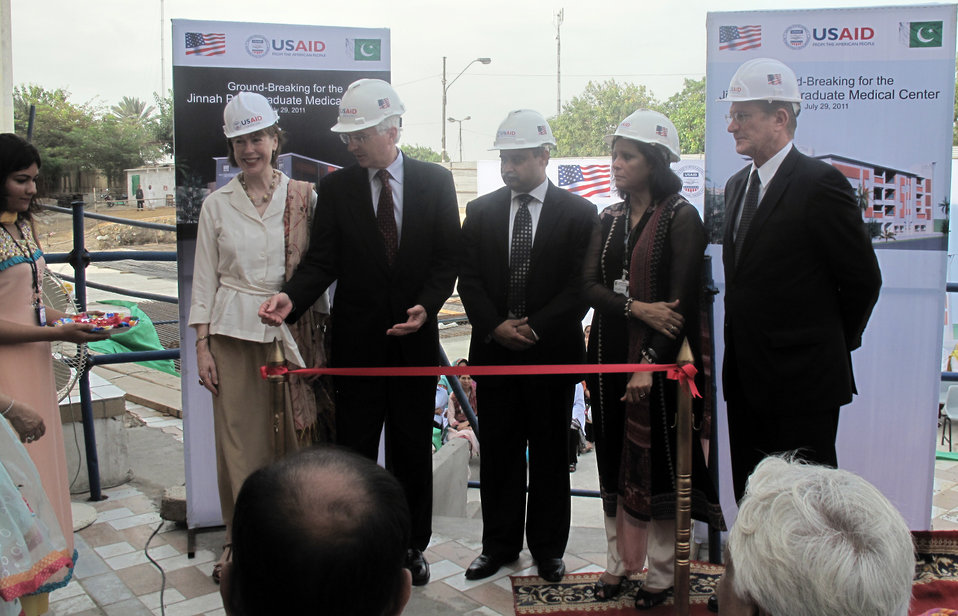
Jinnah Post Graduate Medical Center Karachi

Karachi, July 29, 2011 - U.S. Ambassador Cameron Munter and his wife Dr. Marilyn Wyatt at the groundbreaking for the new USAID-funded obstetrics-gynecological and fistula ward, as well as a training center at the Jinnah Postgraduate Medical Center.

USAID is building a new 60-bed fistula and OBGYN ward at the Jinnah Postgraduate Medical Center. The new ward will include an outpatient and ultrasound department; pharmacy; waiting area; surgical wards; a dedicated fistula ward and lounge; and staff rooms. This building will expand the ability of the hospital to handle obstetric fistula cases, reduce patient load on the two existing OBGYN wards, reduce waiting time for patients needing critical surgical procedures, and improve maternal care.

Additionally, USAID will construct a new building for the training institute with a seminar hall, skills lab, and library for 150 students.